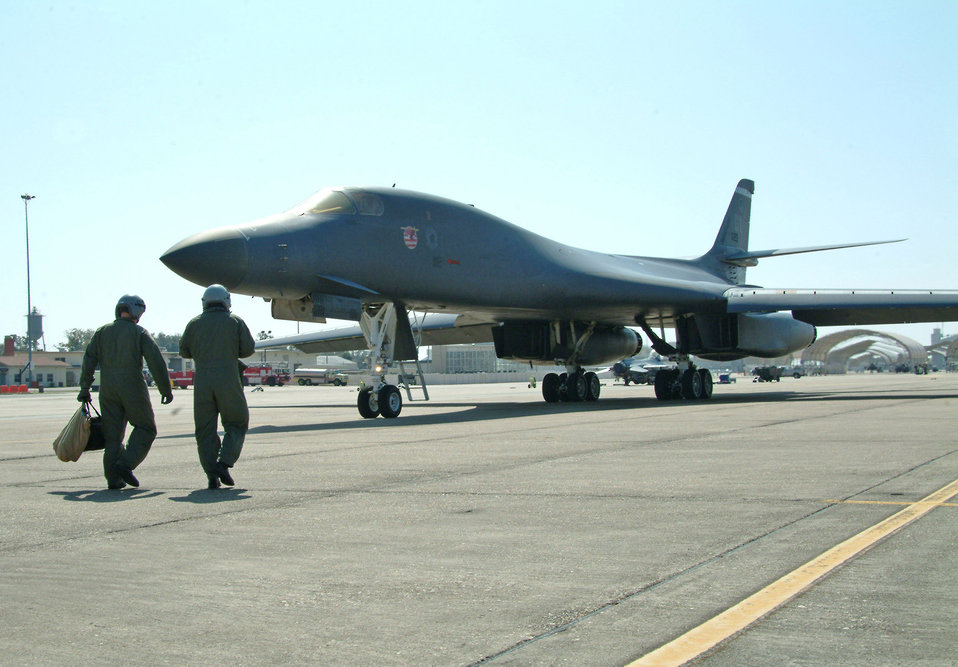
Check your 'six'

Col. Mick Guthals and Capt. Ben Kessler prepare to fly a B-1B Lancer Feb. 25 from Eglin Air Force Base, Fla., to Dyess Air Force Base, Texas. The four-person crew flew a B-1B tail warning function test to analyze if a radar that faces the rear of B-1B detects incoming missiles or aircraft. If detected, the system can deploy defensive countermeasures. Colonel Guthals is the 53d Wing vice commander, and Captain Kessler is a 36th Electronic Warfare Squadron B-1B employment officer.